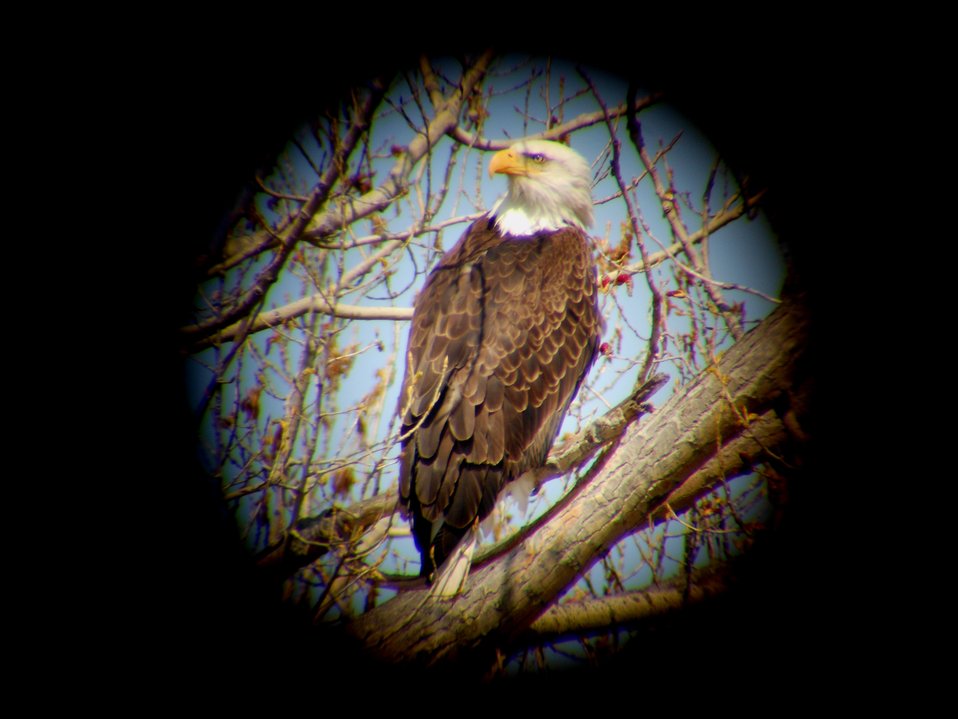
Bald Eagle

Taken through a spotting scope.